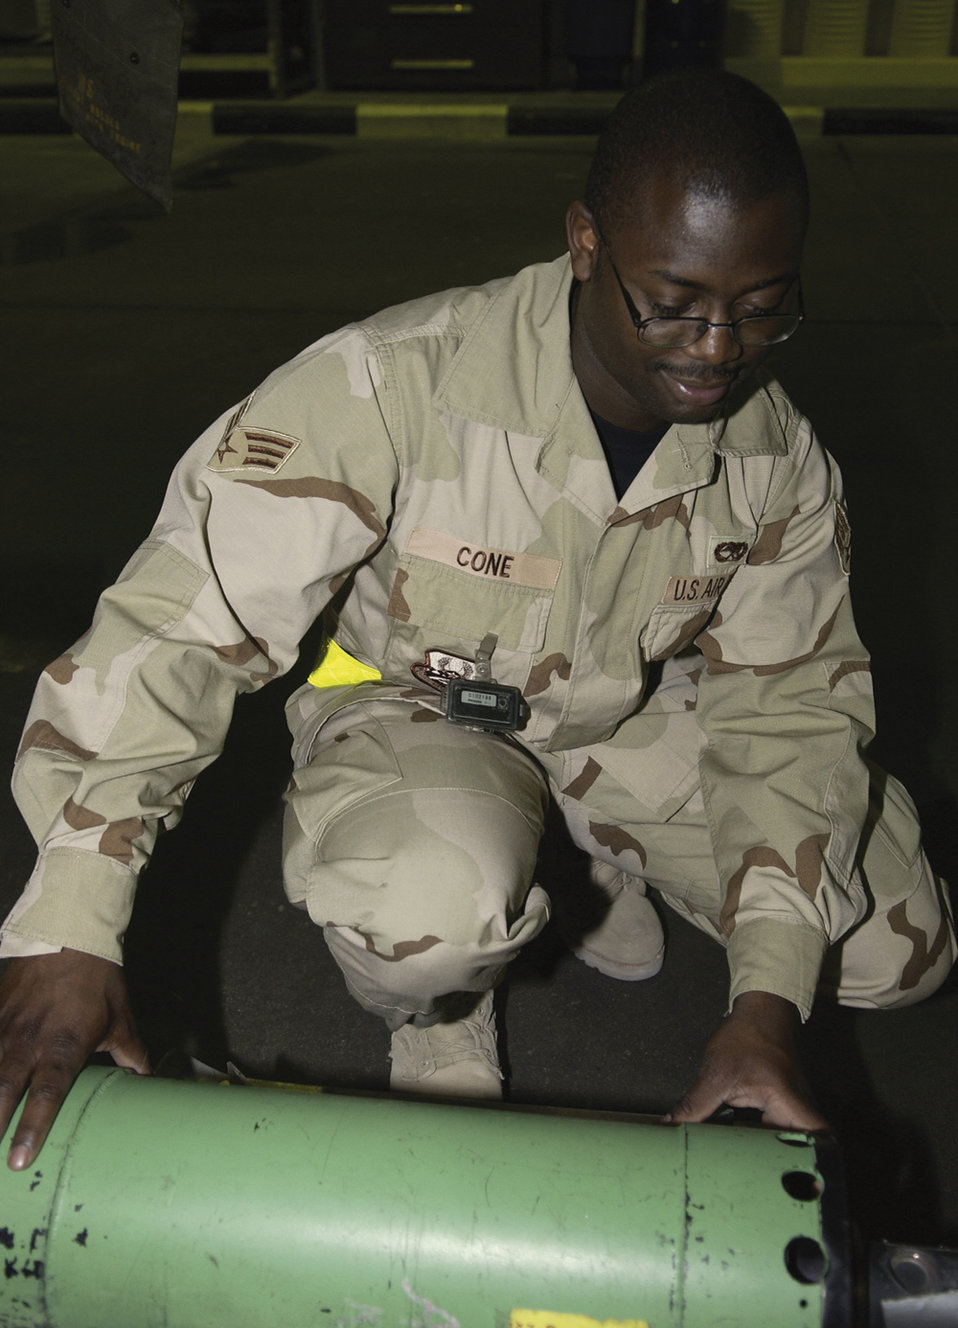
NDI Airmen play big part in mission

SOUTHWEST ASIA -- Senior Airman James Cone prepares for an inspection. He is assigned to the 379th Expeditionary Maintenance Squadron's nondestructive inspection lab at a forward-deployed location and is from Dyess Air Force Base, Texas.